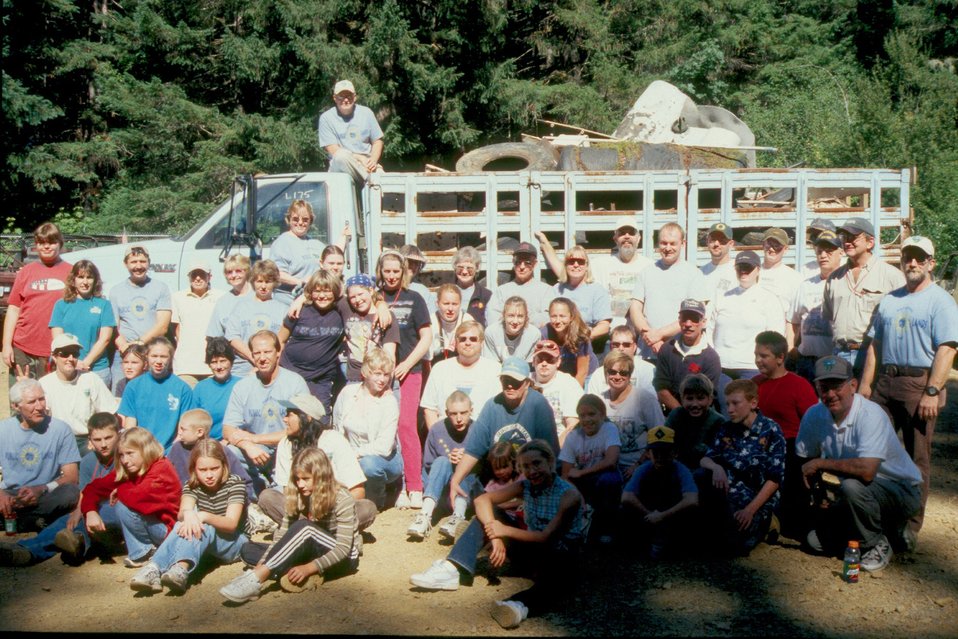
Volunteers and BLM employees posing in front of one of the trucks with their collected trash from BLM lands